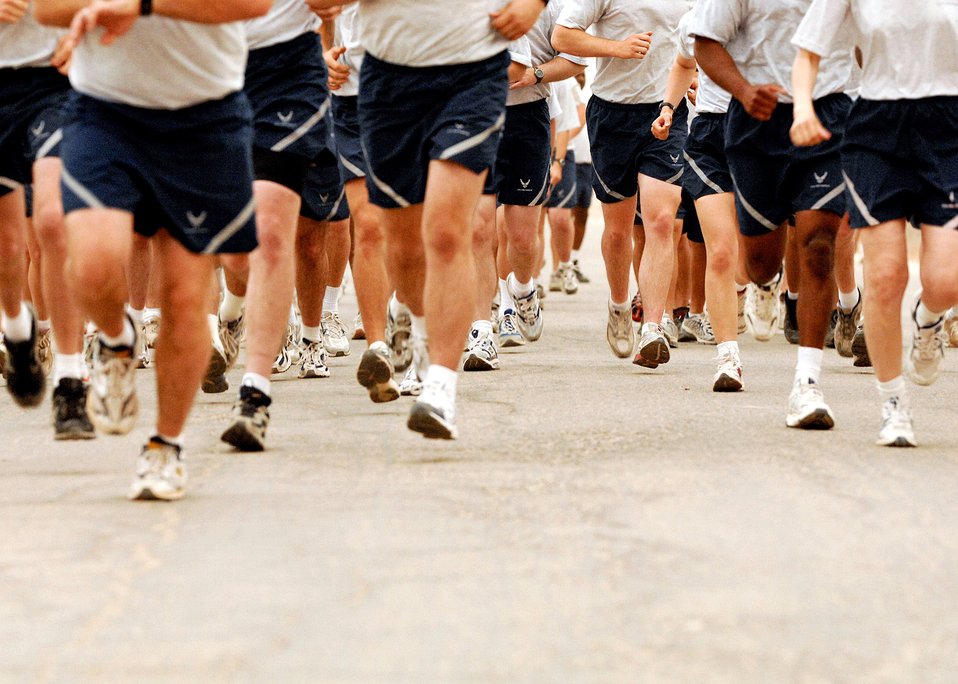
Running and remembering

Members of the 407th Air Expeditionary Group start a 5K run, which is the kickoff to a full day of events celebrating Memorial Day May 28 at Ali Air Base, Iraq. Memorial Day, originally named Decoration Day, was instituted May 5, 1866, in Waterloo, N.Y., to honor the fallen Union Soldiers of the Civil War. After World War I it was expanded to include all military members that have given the ultimate sacrifice for their country.